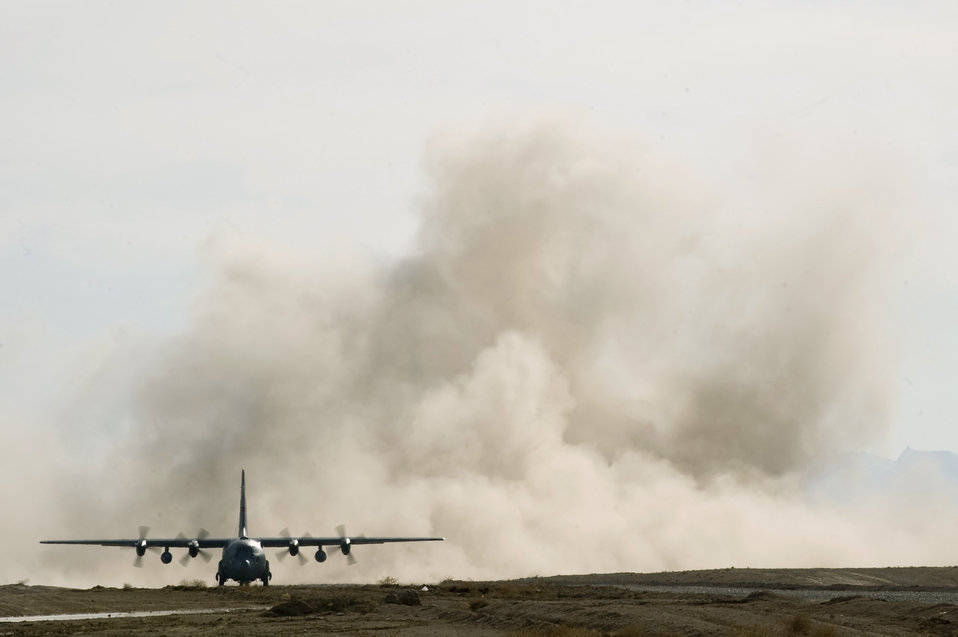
Last frontier for tactical air control

An aircrew operating a C-130 Hercules prepares to depart Forward Operating Base Davis, Afghanistan, Feb. 16, 2011. Airmen from the 807th Expeditionary Air Support Operations Squadron at FOB Lagman ensured the dirt landing zone was safe for aircraft to land and depart.